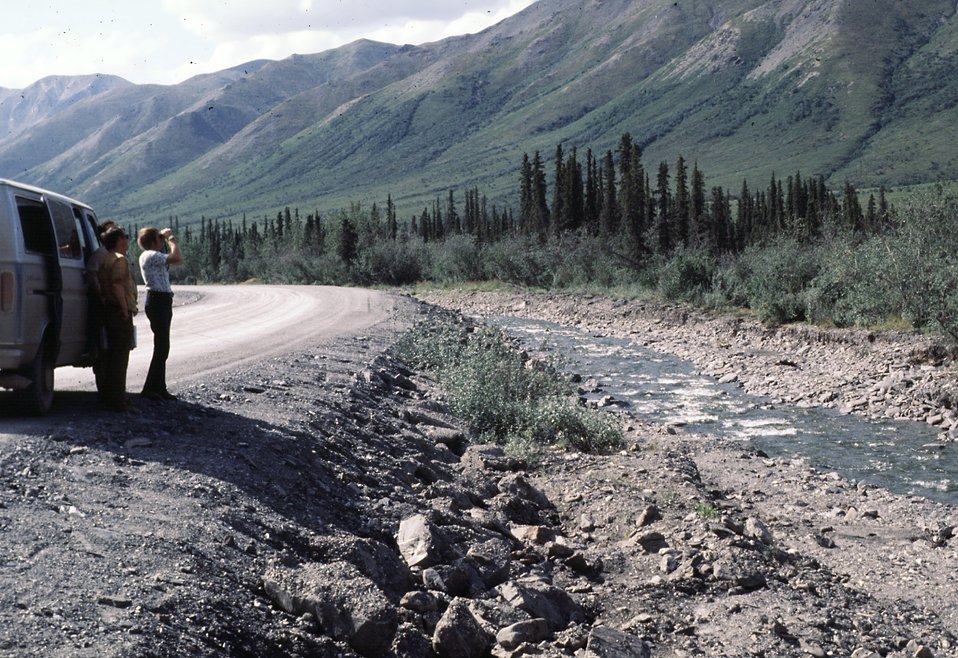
Relignment of Dietrich River, Dalton Highway